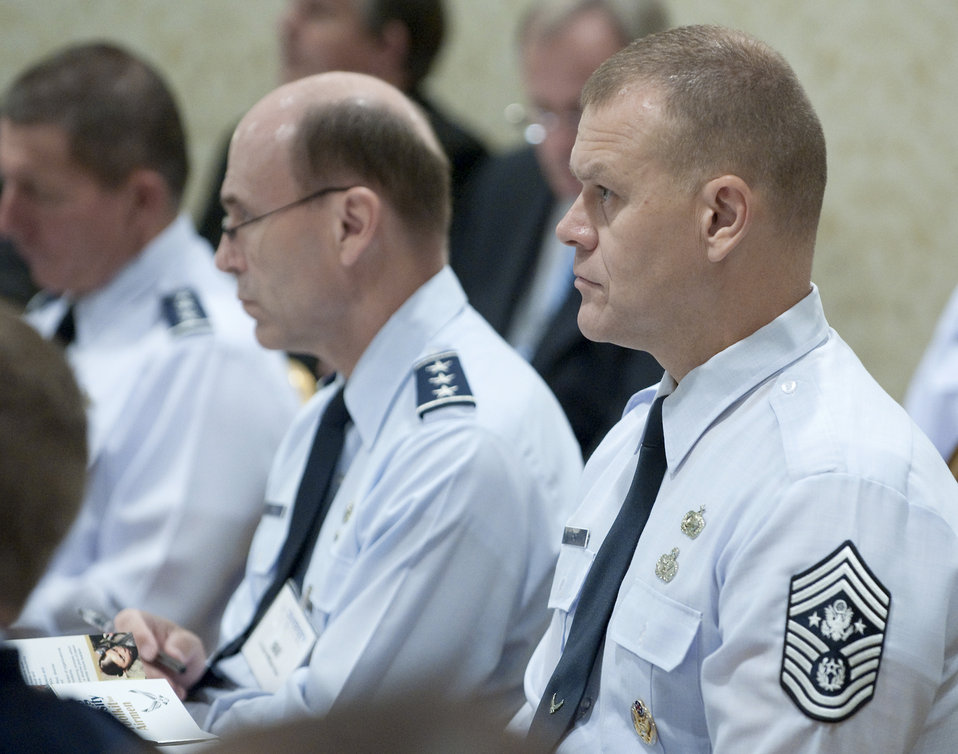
Diversity Working Group

Chief Master Sgt. of the Air Force James A. Roy participates in the Air Force Diversity Senior Leader Working Group on Oct. 18, 2010, in Washington, D.C. The group met Oct. 17 through 18, and focused on developing a performance-based leadership strategy to leverage the unique qualities of all Airmen.